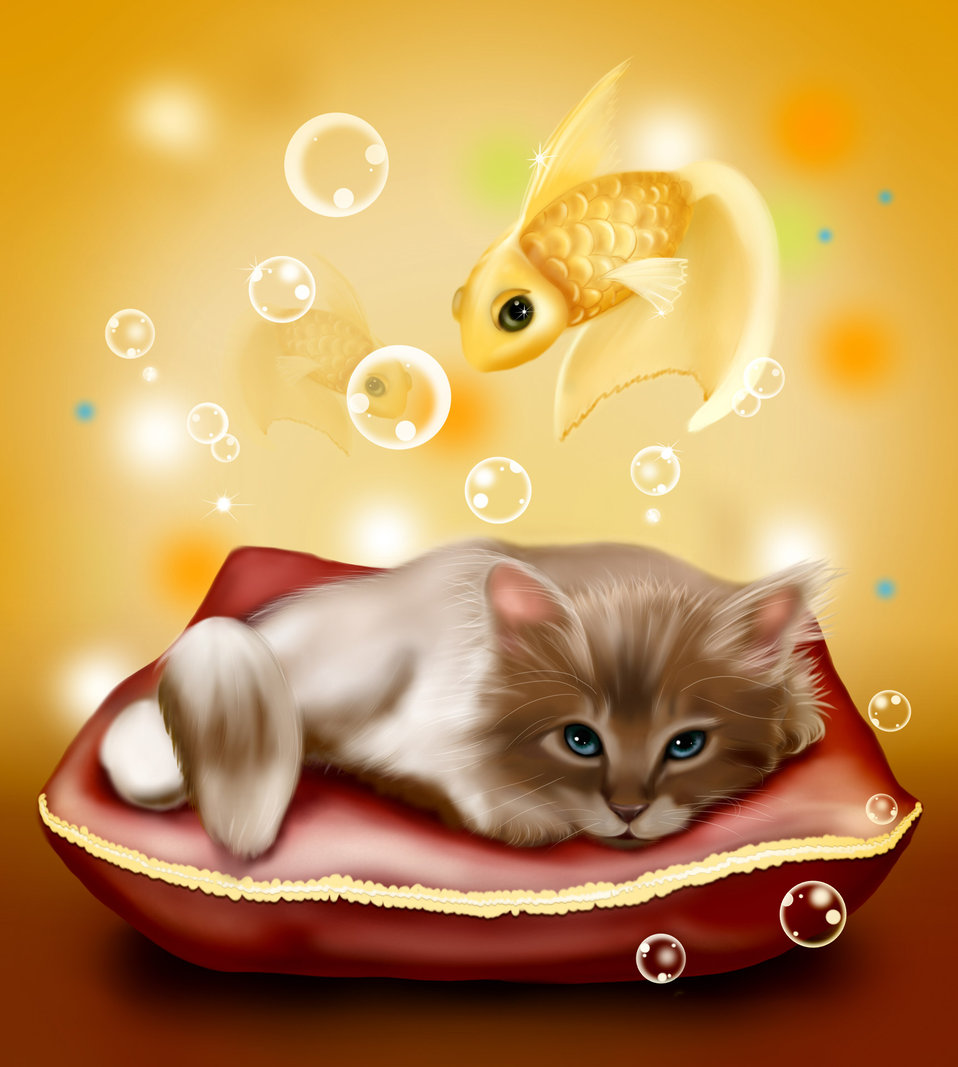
Dream kitten

Little kitty dreams of tasty fish..